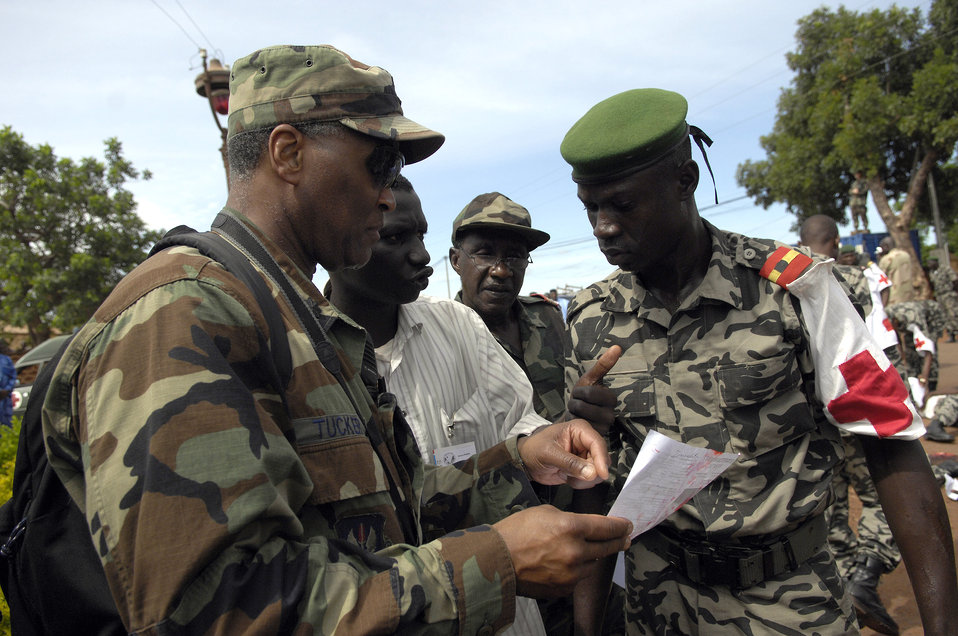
American and African medical personnel train together

Lt. Col. Duane Tucker talks with Malian medical personnel July 18 about proper triage proceedures during the mass casualty portion of MEDFLAG 08. More than 90 servicemembers deployed to Bamako, Mali, for the multi-national medical training exercise. The exercise is designed to enhance medical capabilities and readiness for U.S. and African Forces. Colonel Tucker is a dermatologist deployed from the 48th Medical Group at Royal Air Force Lakenheath, England.